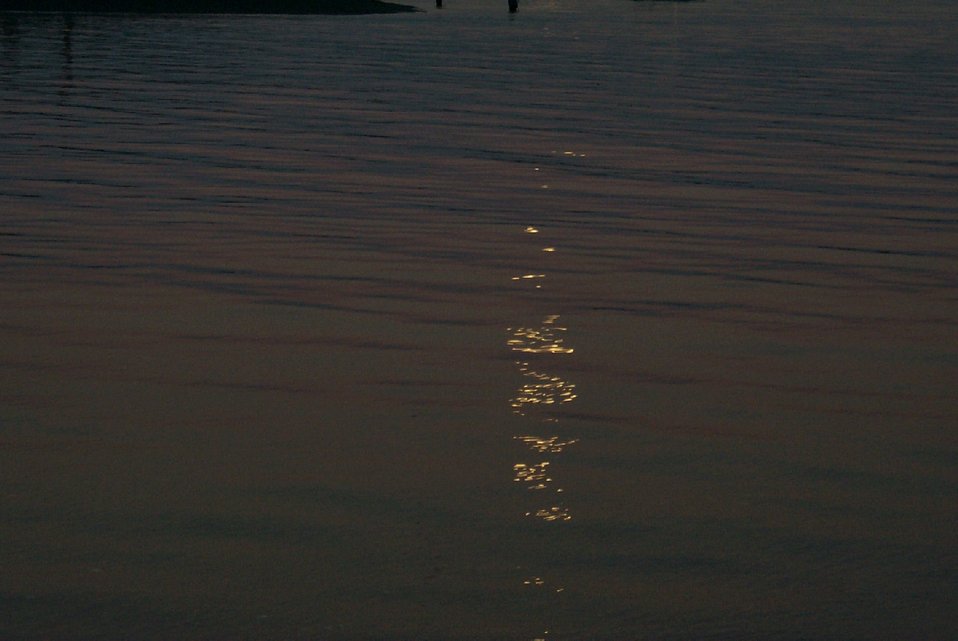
Moon beams on the still waters of Gig Harbor.